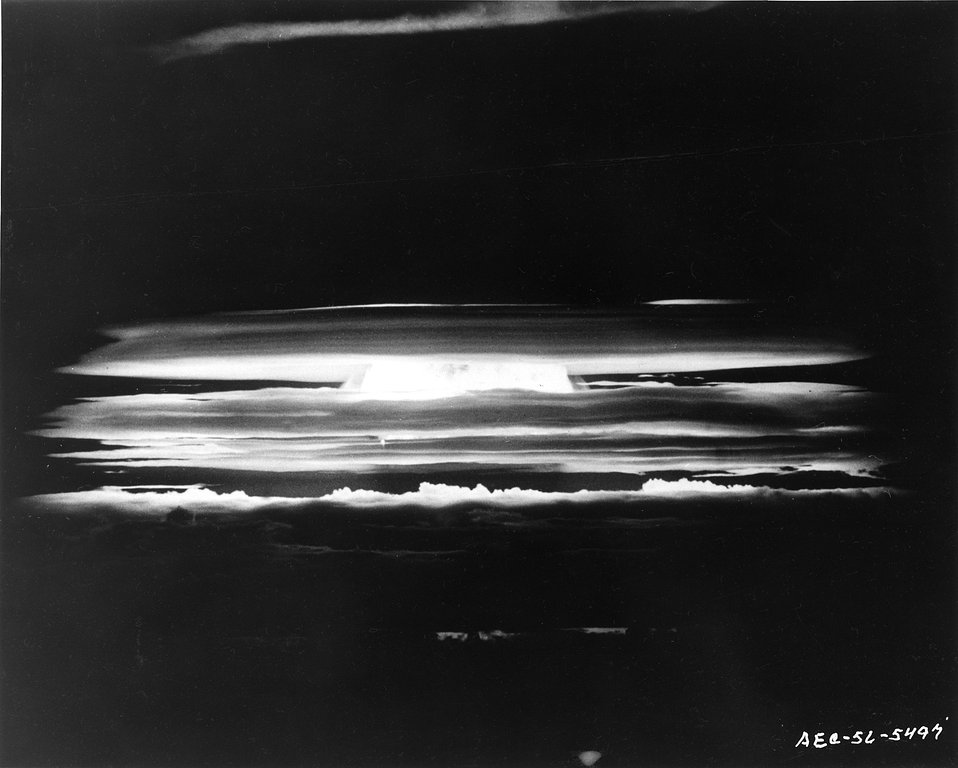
Fireball of May 21, 1956 test detonation over Bikini Atoll.